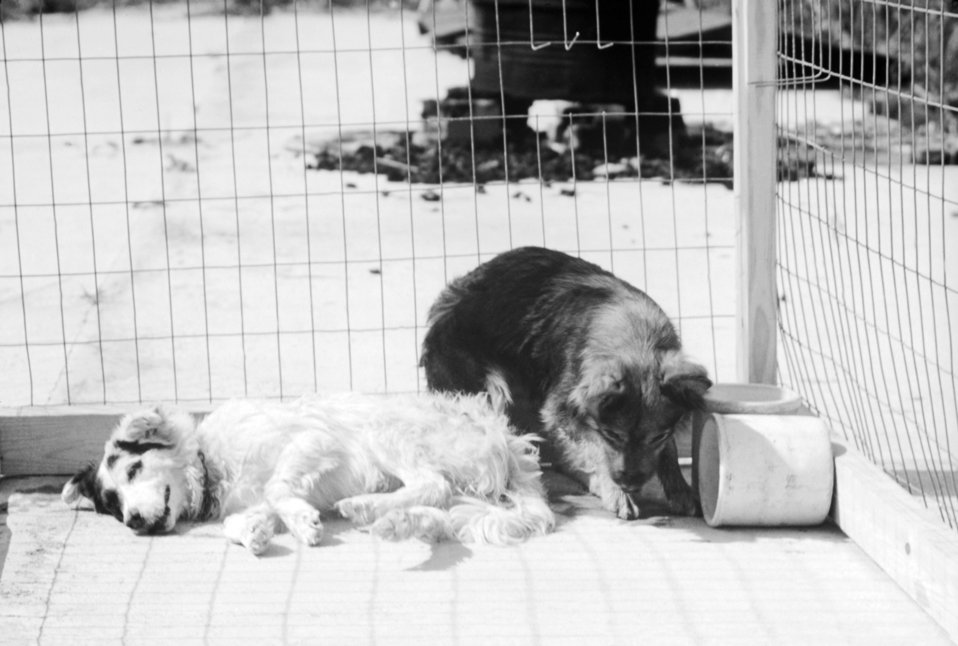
A photograph of two dogs in a pen that are afflicted with dumb rabies.